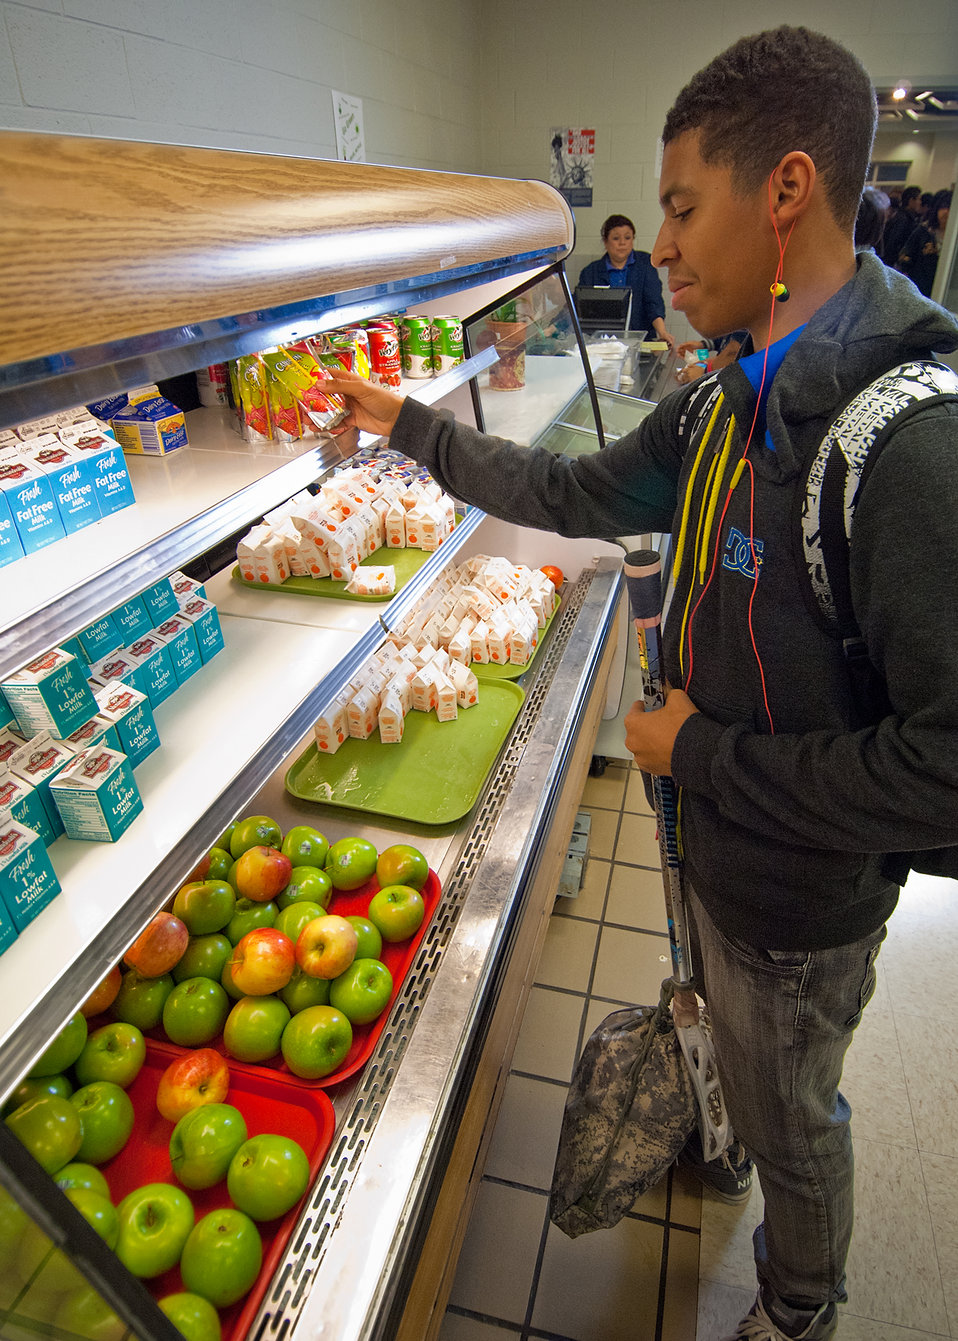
A student at Washington-Lee High School selects fruit juice for breakfast, on Wednesday, October 19, 2011, the school breakfast and lunch are prepared by Arlington Public Schools, Food and Nutrition Services. The National School Lunch Program is a federally assisted meal program administered by the United States Department of Agriculture, Food and Nutrition Service operating in public, nonprofit private schools and residential child care institutions. It provides nutritionally balanced, low-cost or free lunches to children each school day.